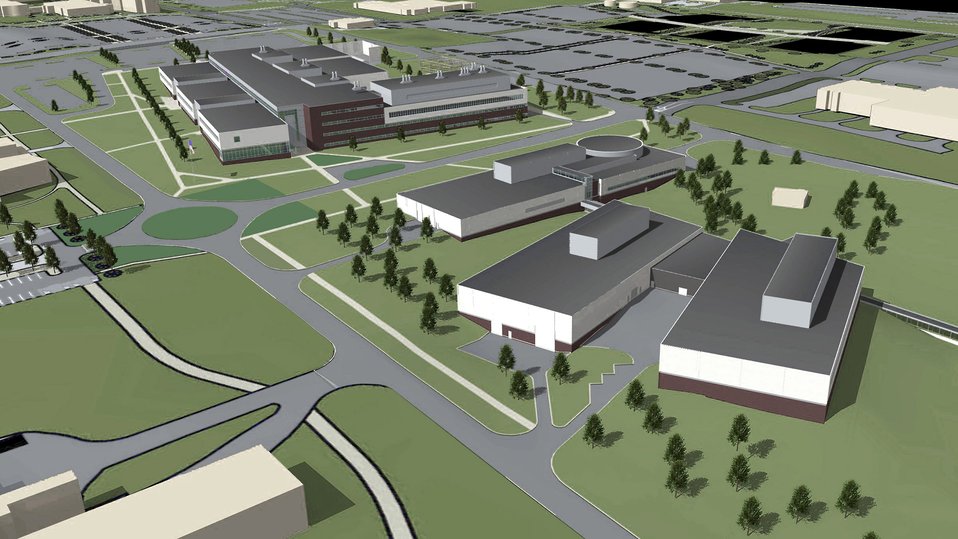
Officials award $194.5 million consolidation contract

An artist conception shows the 711th Human Performance Wing complex to be constructed at Wright-Patterson Air Force Base, Ohio. A joint venture that includes Dayton, Ohio, contractor Butt Construction Co., along with Archer Western Contractors, LTD., a part of the Chicago-based Walsh Group, received the $194.5 million award. The announcement came from the Army Corps of Engineers district office in Louisville, Ky., April 16. Officials expect groundbreaking to begin this summer.